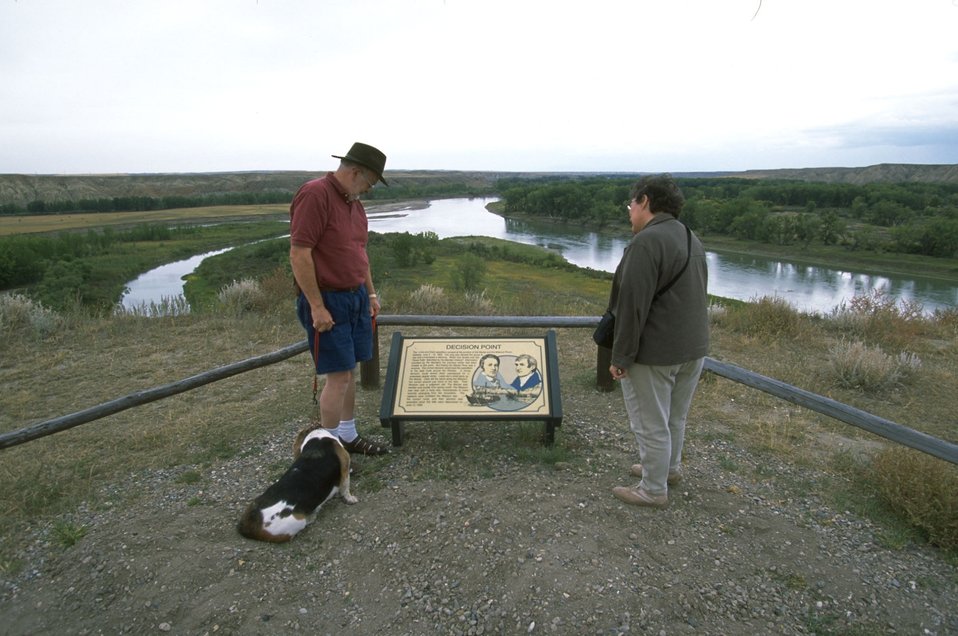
People at Decision Point interpretive sign.